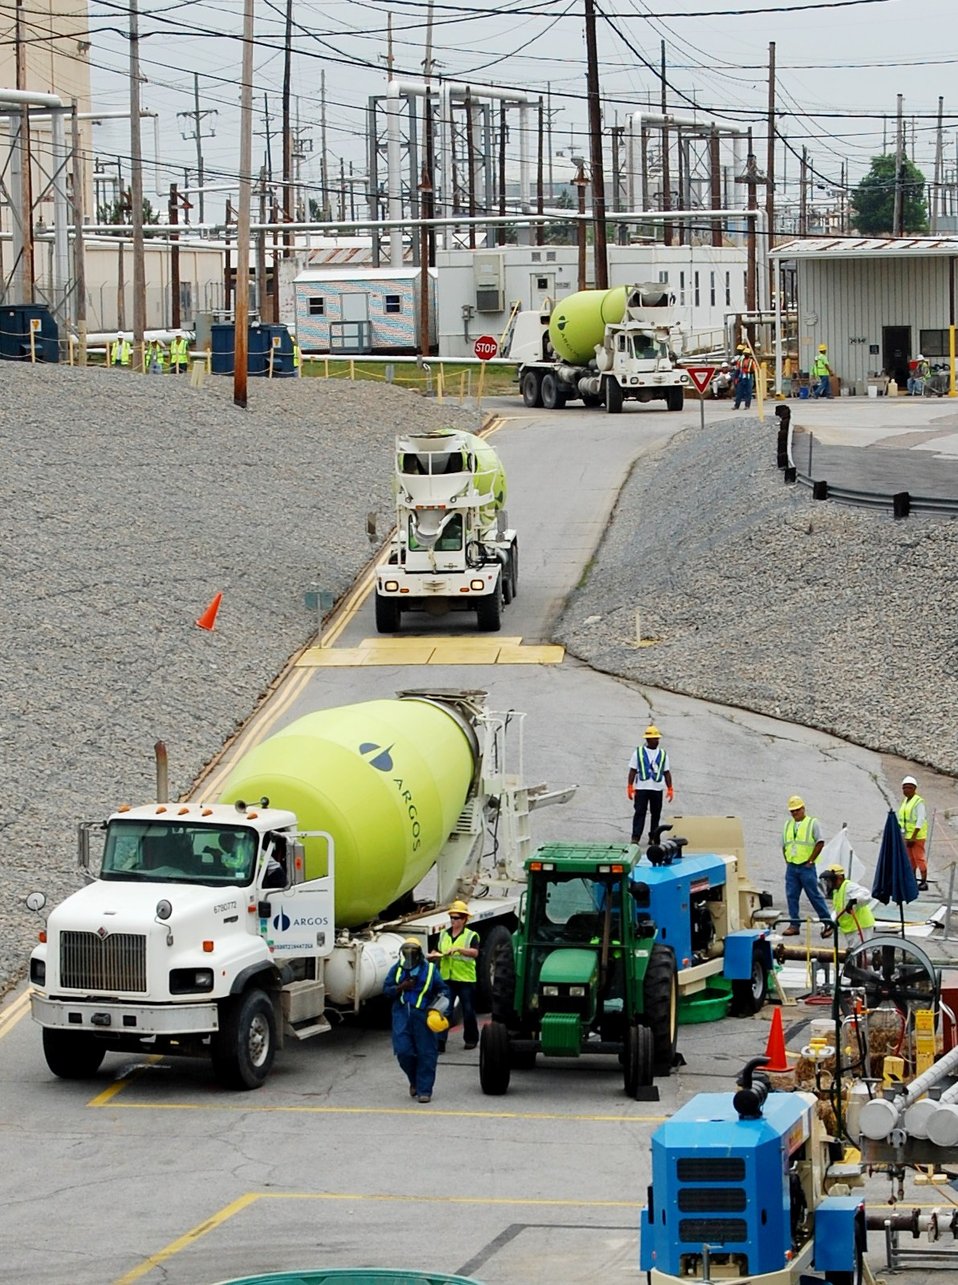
Workers Pour 1 Million Gallons of Grout into Massive Tanks

Cement trucks transport a specially formulated grout that is pumped into waste tanks.

Workers have poured more than 1 million gallons of a cement-like grout into two underground radioactive waste tanks, moving the Savannah River Site (SRS) nearer to closing the massive structures.